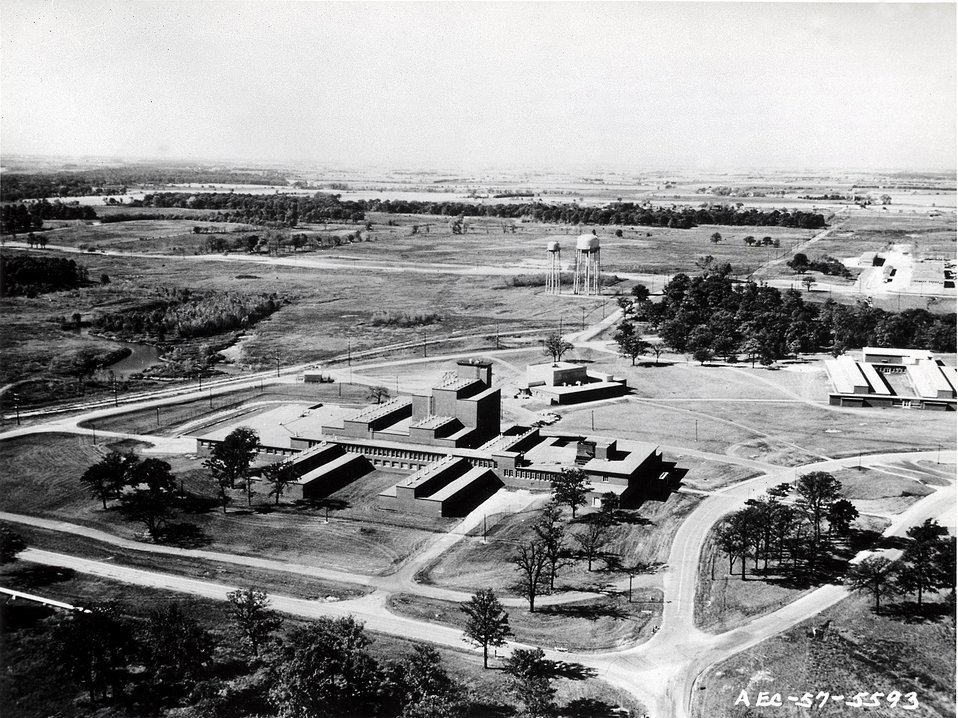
Aerial view of some of the permanent buildings at Argonne.
c.1957